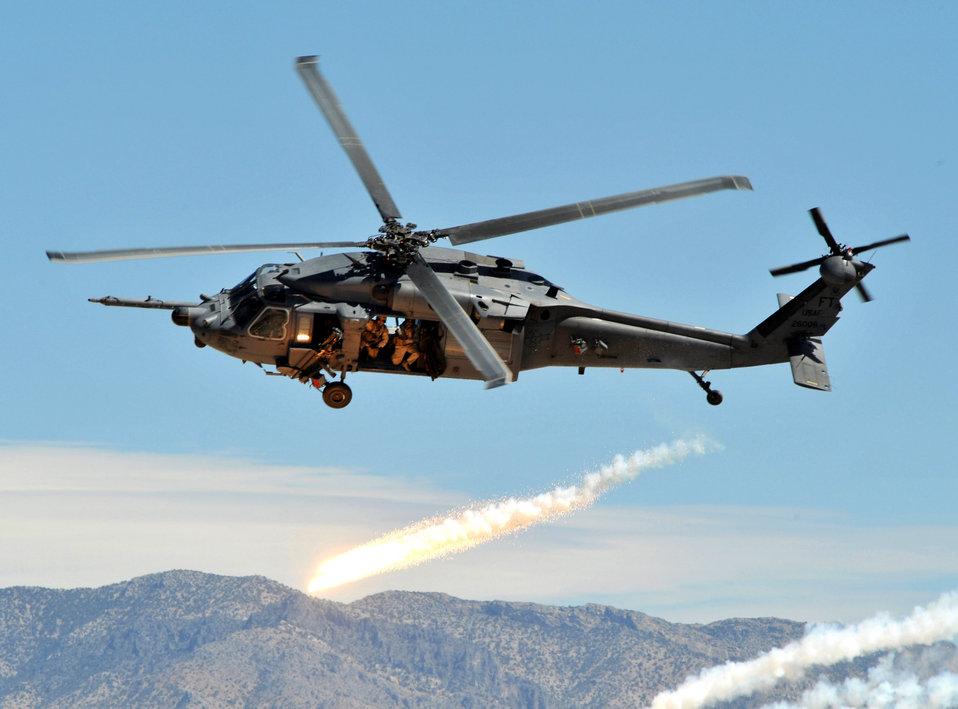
Maintaining the edge

An HH-60 Pave Hawk assigned to Nellis Air Force Base, Nev., fires chaff and flares Sept. 14 while demonstrating evasive maneuvers during a demonstration at the Nevada Test and Training Range. The demonstration gave spectators a close-up view into the Air Force's ability to perform its wartime mission.